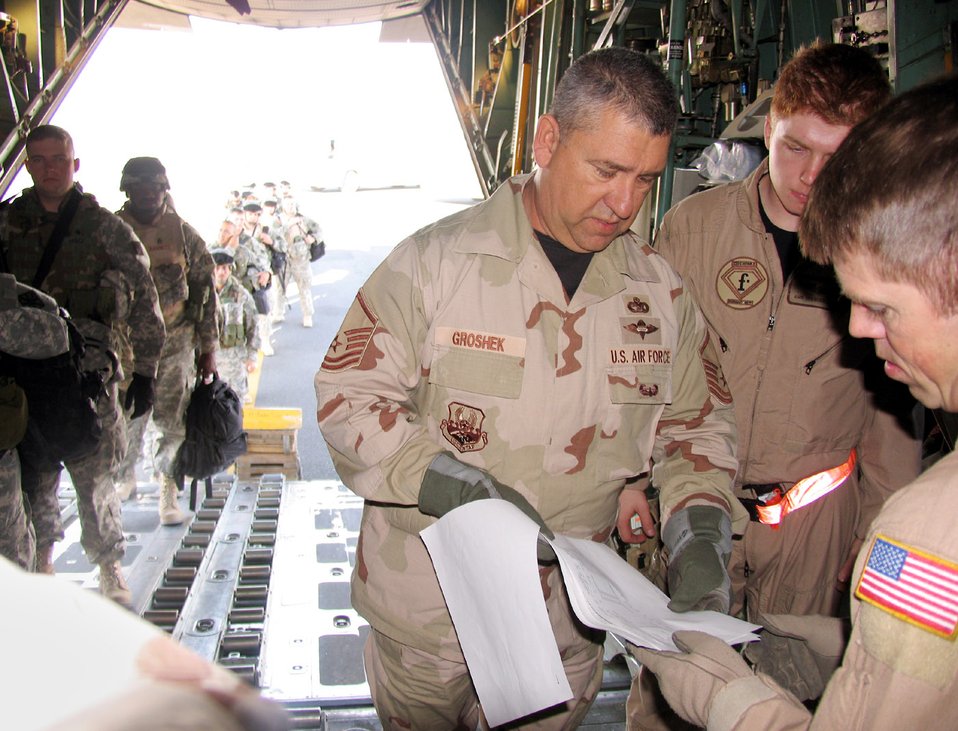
Record cargo movers

SOUTHWEST ASIA (AFPN) -- Master Sgt. Mark Groshek (center) checks a passenger manifest with Tech. Sgt. Terry Williamson (right) before departing with 44 passengers and 5,500 pounds of baggage to Iraq. Sergeant Groshek is with the 386th Expeditionary Logistics Readiness Squadron and deployed from the 34th Aerial Port Squadron at Billy Mitchell Air Reserve Station, Wis. Sergeant Williamson is with the 737th Expeditionary Airlift Squadron and deployed from the 41st Airlift Squadron at Pope Air Force Base, N.C.